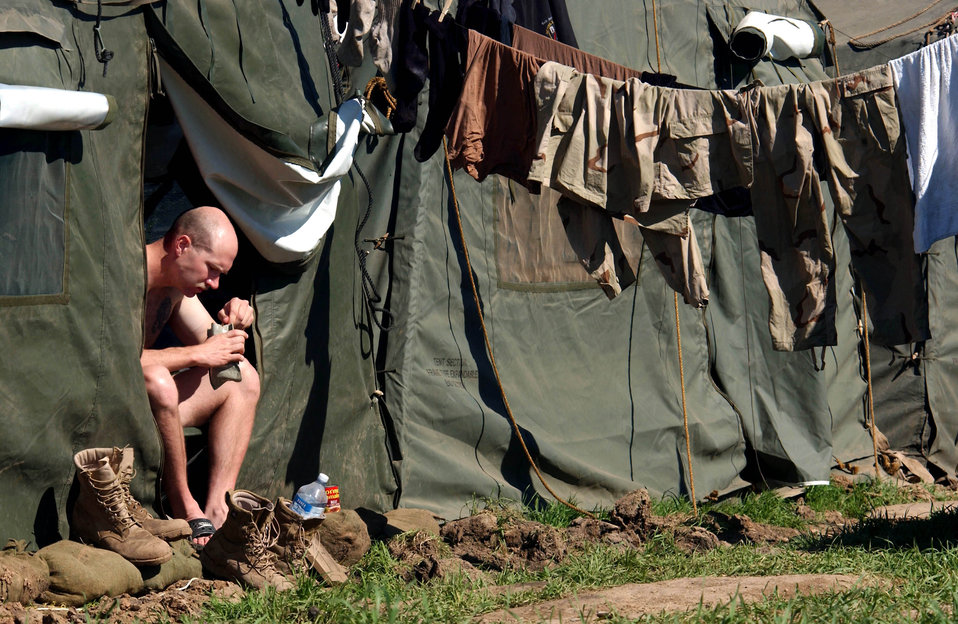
The comforts of home?

OPERATION IRAQI FREEDOM -- Security Forces member Tech. Sgt. Bobby Hoyt takes a minute to grab lunch, a meals ready to eat at the entrance to his tent. Hoyt is deployed with the 86th Expeditionary Contingency Response Group at Bashur Airfield in northern Iraq.